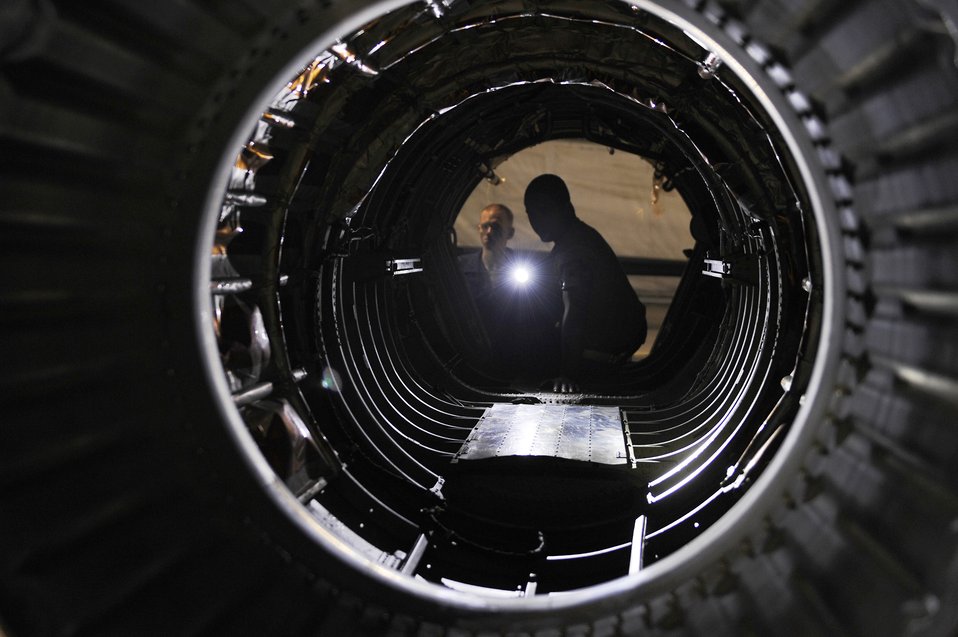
Eye on you

Staff Sgt. Charles Wills shines a flashlight into the tail section of a U-2 Dragon Lady at an air base in Southwest Asia, Dec. 2, 2010. The U-2 is a high altitude reconnaissance aircraft that reaches altitudes above 70,000 feet. Sergeant Wills is assigned to the 380th Expeditionary Aircraft Maintenance Squadron.